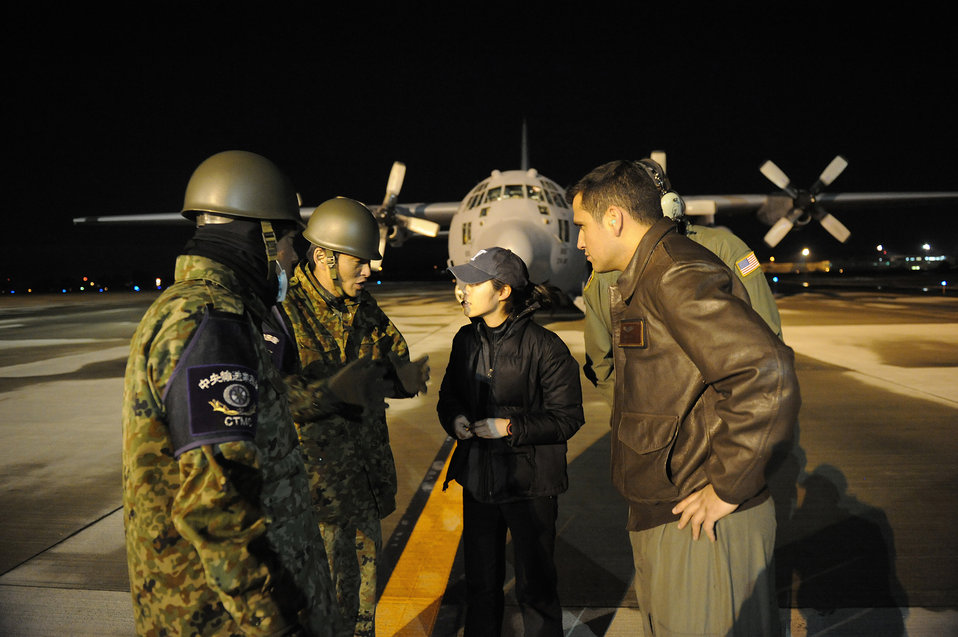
Medical supplies for Japan

Japan Self-Defense Forces members communicate with Dr. Maya Arii and Capt. Aron Pena about off-loading medical supplies from a C-130 Hercules March 19, 2011, in Hanamaki, Japan. Captain Pena is assigned to the 36th Airlift Squadron.